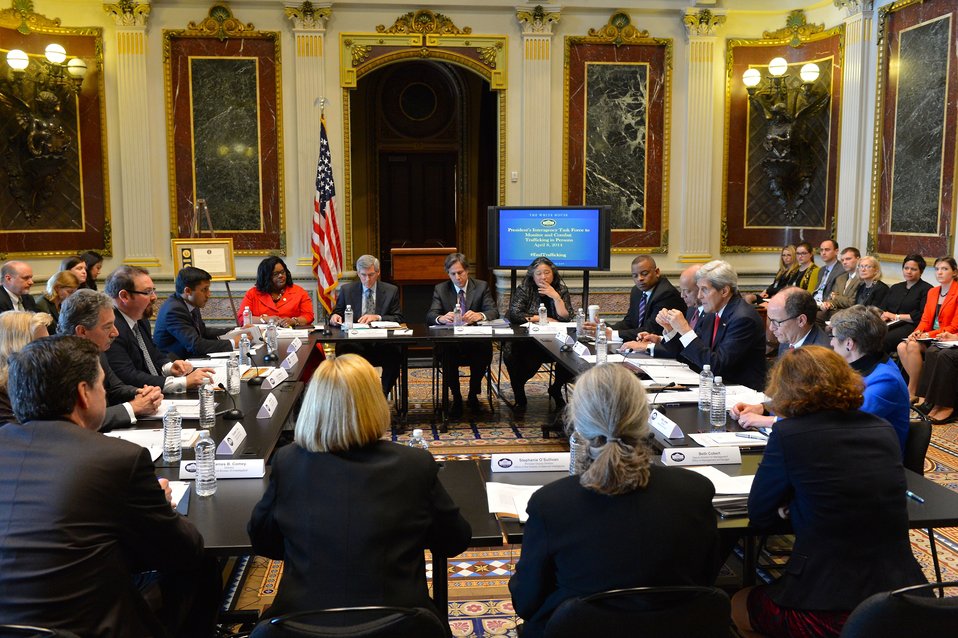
Secretary Kerry Chairs the President’s Interagency Task Force to Monitor and Combat Trafficking in Persons

U.S. Secretary of State John Kerry chairs the annual meeting of the President’s Interagency Task Force to Monitor and Combat Trafficking in Persons at the White House in Washington, D.C., on April 8, 2014.